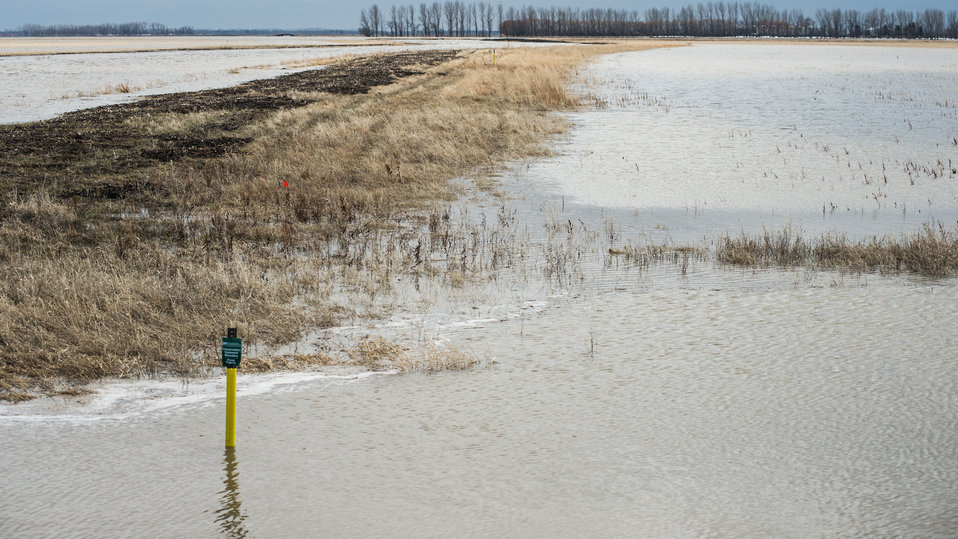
Conservation Easement Boundary markers identify Neil Hanson's Emergency Watershed Protection (EWP) Flood Plain Easement located east of Bowesmont, in the Red River basin of ND, Wednesday May 1, 2013. To learn about the Red River Basin Initiative, see www.mn.nrcs.usda.gov/news/features13/RRBI.html.